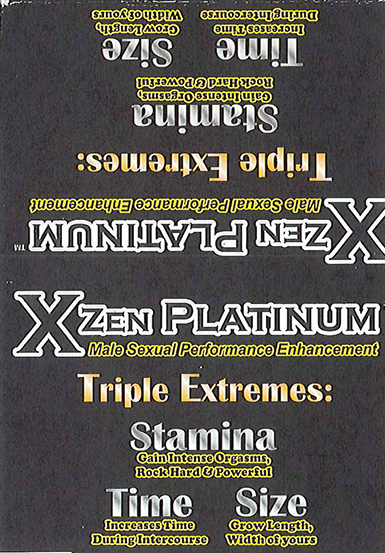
RECALLED – Dietary Supplement

April 1, 2014 – Product Recall – Nova Products, Inc. Issues Voluntary Nationwide Recall of Dietary Supplements with Undeclared Active Pharmaceutical Ingredients.